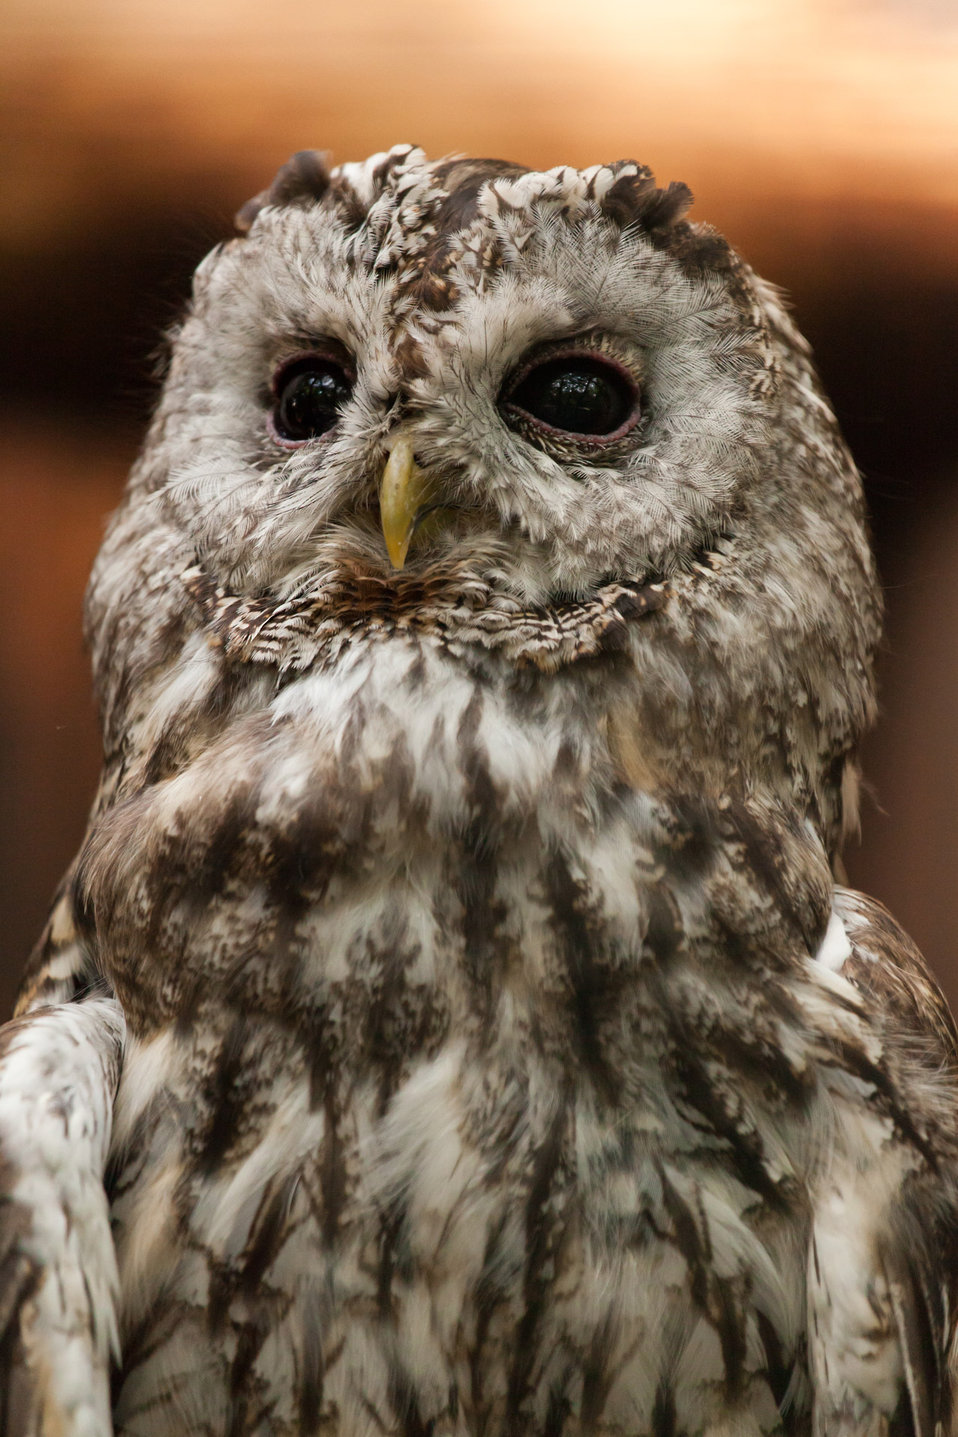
Tawny owl portrait.